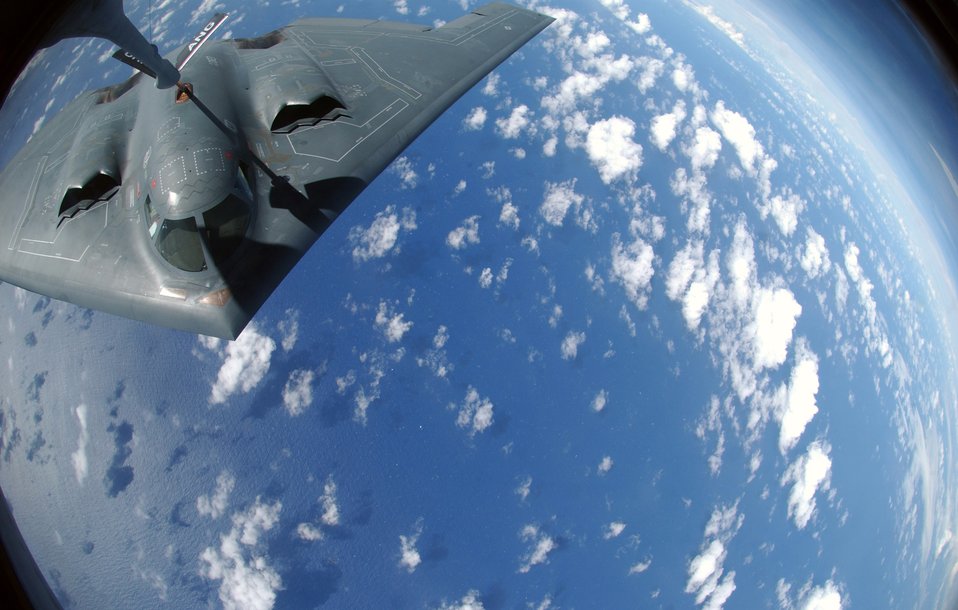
Keeping Spirits up

A KC-135 Stratotanker refuels a B-2 Spirit Nov. 20 over the Pacific Ocean. The B-2 and KC-135 are deployed to Andersen Air Force Base, Guam, to support U.S. Pacific Command's continuous bomber presence and theater security package operations. The KC-135 is assigned to the from the 121st Refueling Squadron from Rickenbacker International Airport at Columbus, Ohio. The B-2 is assigned to the 509th Bomb Wing from Whiteman AFB, Mo.